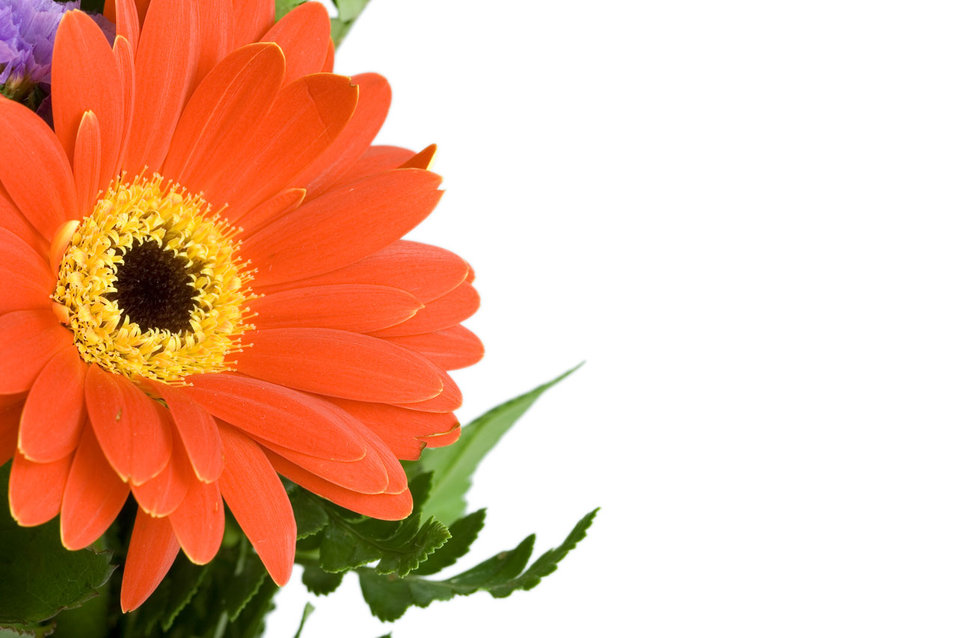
Gerbera on white background.